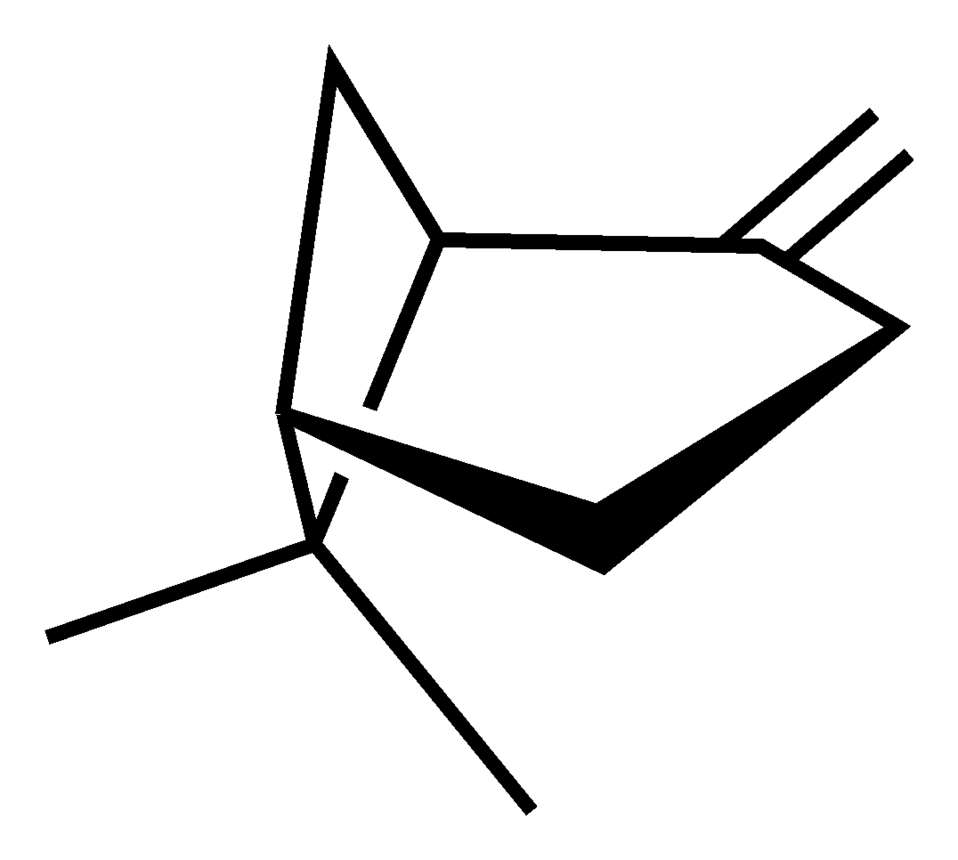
Skeletal formula of ( )-β-pinene